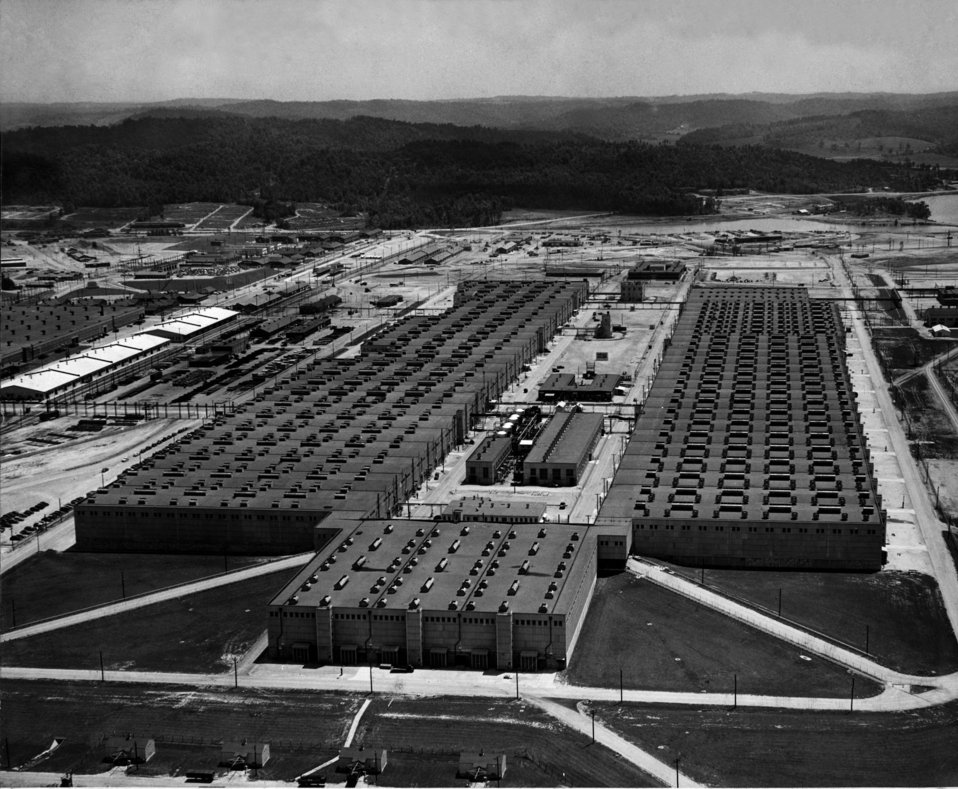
K-25 Air View Oak Ridge

pro 3504 DOE photo by Ed Westcott 1947 Oak Ridge Tennessee